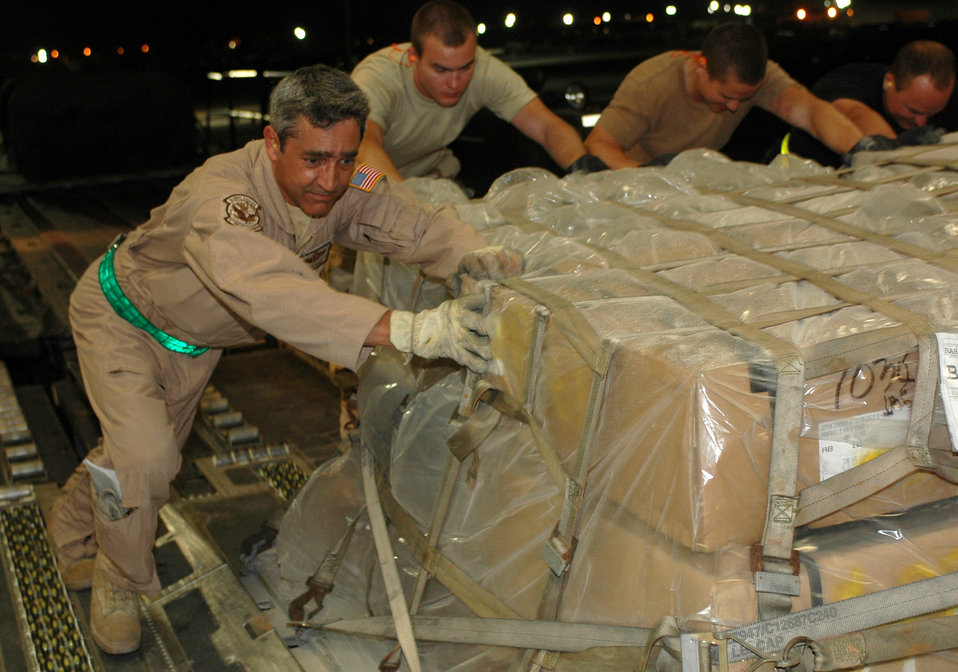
Time flies in the sky

Master Sgt. Joe Maxey (left) helps push palletized cargo into a C-17 Globemaster III from a 60K loader. Sergeant Maxey surpassed the 10,000th milestone in flying hours April 3. Sergeant Maxey is a loadmaster with the 816th Expeditionary Airlift Squadron.